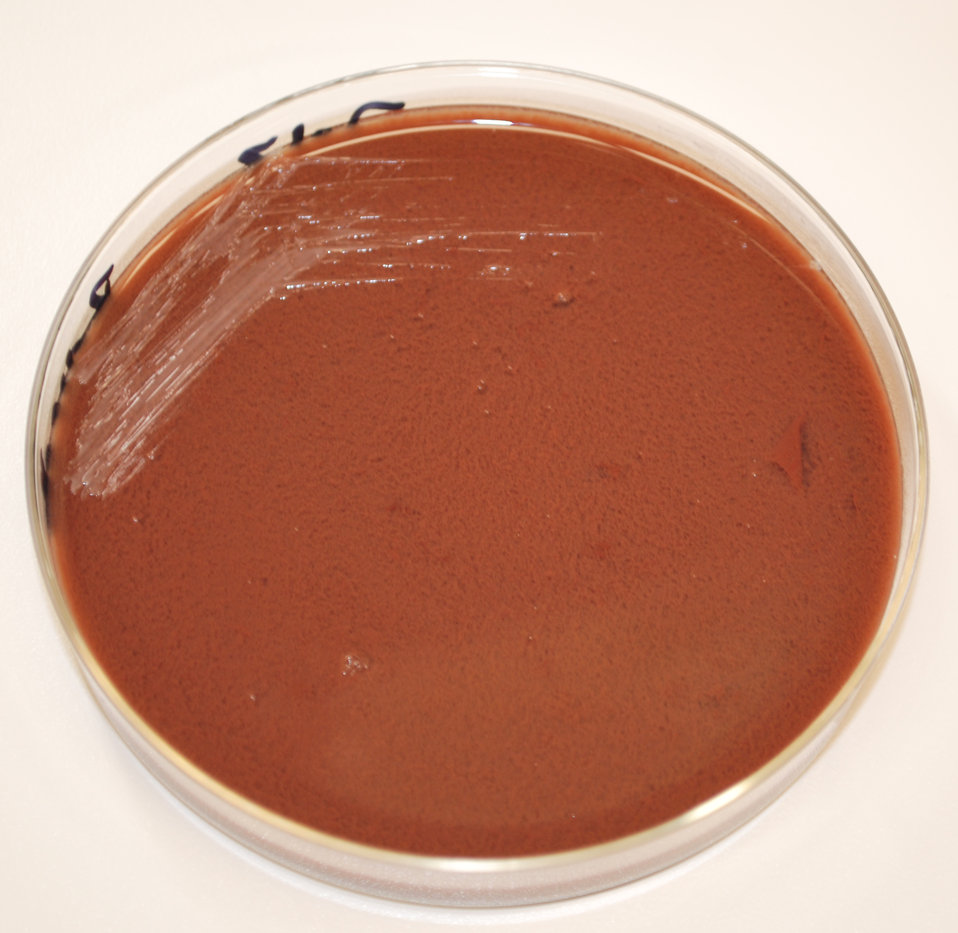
This image depicts the colonial morphology exhibited by colonies of Brucella abortus bacterial, which had been cultivated on chocolate agar, for a period of 24 hours.Infectious Agent